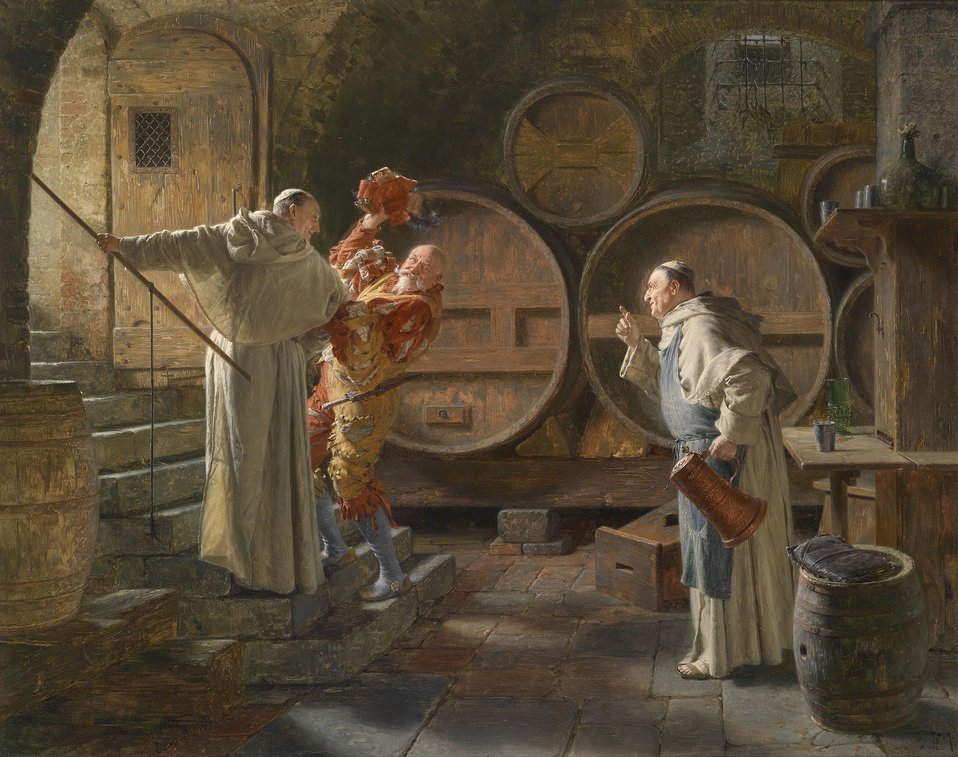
Deutsch: Nach schwerer Sitzung, signiert, datiert Ed. Grützner 12.1892, Öl auf Leinwand, 71 x 89,5 cm